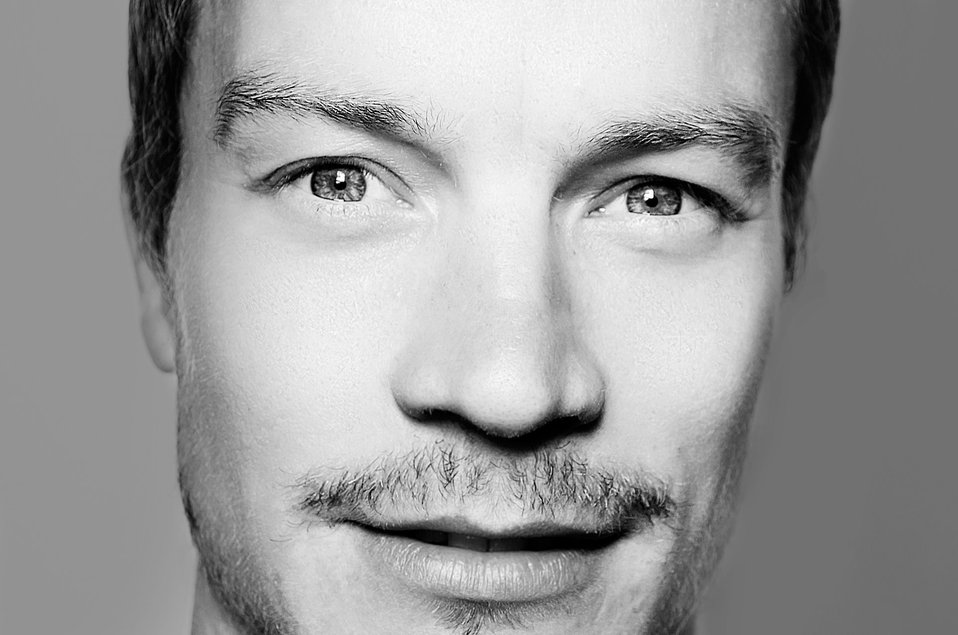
Face of the man - black and white.